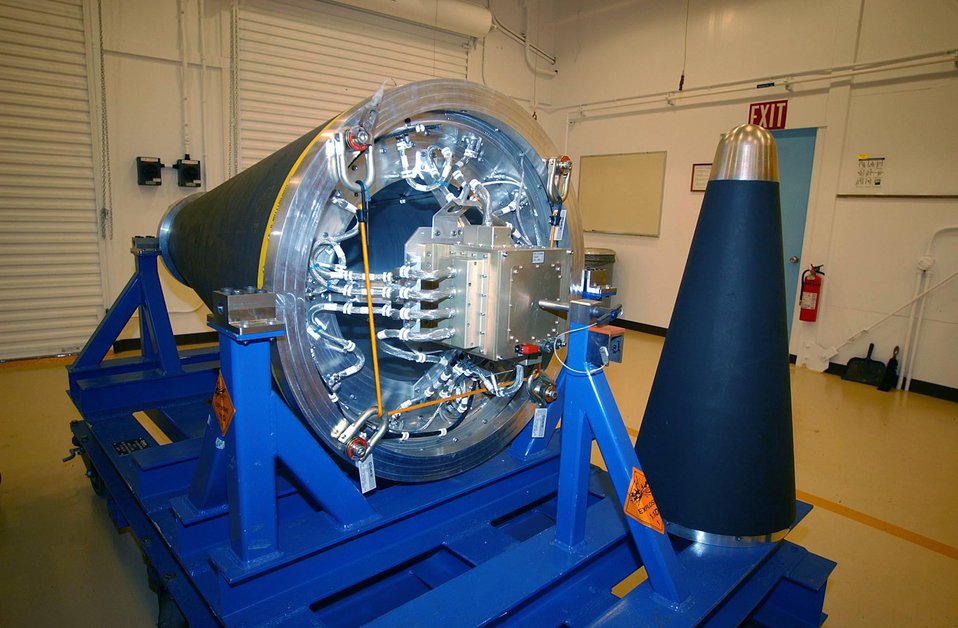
PREPARATION OF THE FM-5 TARGET ROCKET IN KTF'S MISSILE ASSEMBLY BUILDING.

FM-5 IS A MISSILE DEFENSE ROCKET BEING PREPARED FOR LAUNCH. SANDIA'S KAUAI TEST FACILITY, OPERATED FOR DOE, IS ON THE U.S. NAVY'S PACIFIC MISSILE RANGE FACILITY ON THE ISLAND OF KAUAI, HAWAII. SINCE 1962 SANDIA HAS SENT SCIENTISTS AND TECHNICIANS TO CONDUCT ROCKET FLIGHT TEST EXPERIMENTS RANGING FROM OFFENSIVE AND DEFENSIVE WEAPONS TESTING TO ATMOSPHERIC STUDIES AND HIGH TECH STAR GAZING.